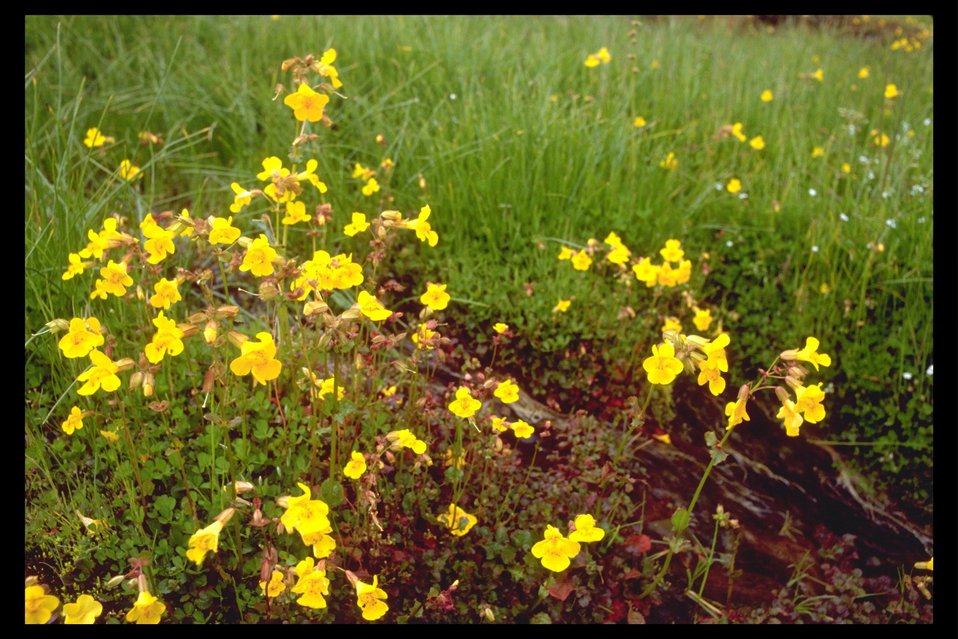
Seepspring Monkey Flower (Mimulus guttatus) along Crowfoot Road, east of Lost Creek.